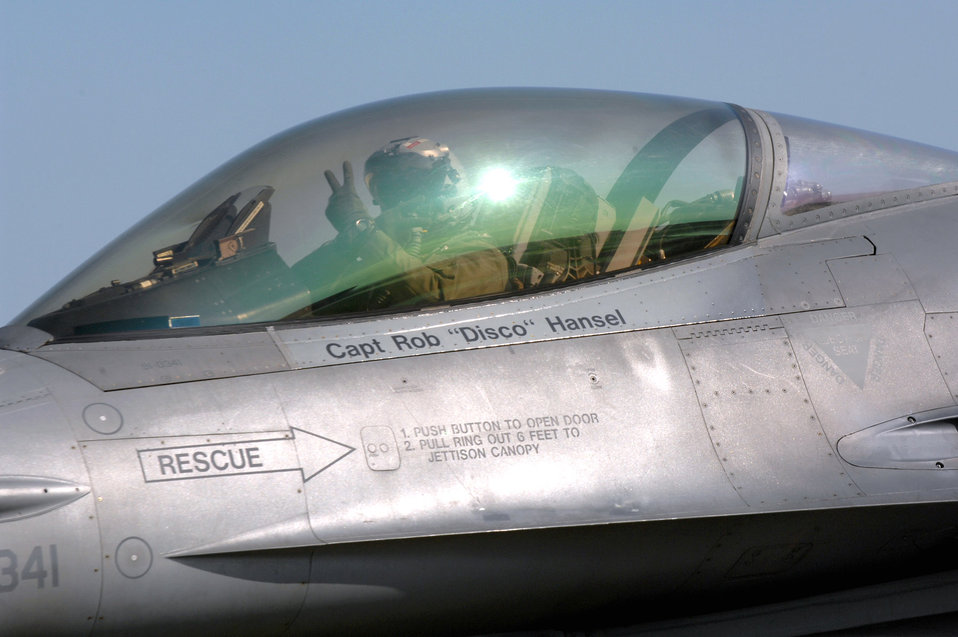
Pilots' missions relocate for Spangdahlem's runway repairs

Capt. Robert Hansel shows his pride as he taxis his F-16 Fighting Falcon to the runway June 11 on Spangdahlem Air Base, Germany, to fly en route to Nellis Air Force Base, Nev. Captain Hansel is one of many pilots and crews from the 22nd, 23rd and 81st Fighter Squadrons leaving the base to continue flying missions and training in other locations while the runway gets repaired. Captain Hansel is assigned to the 22nd FS.